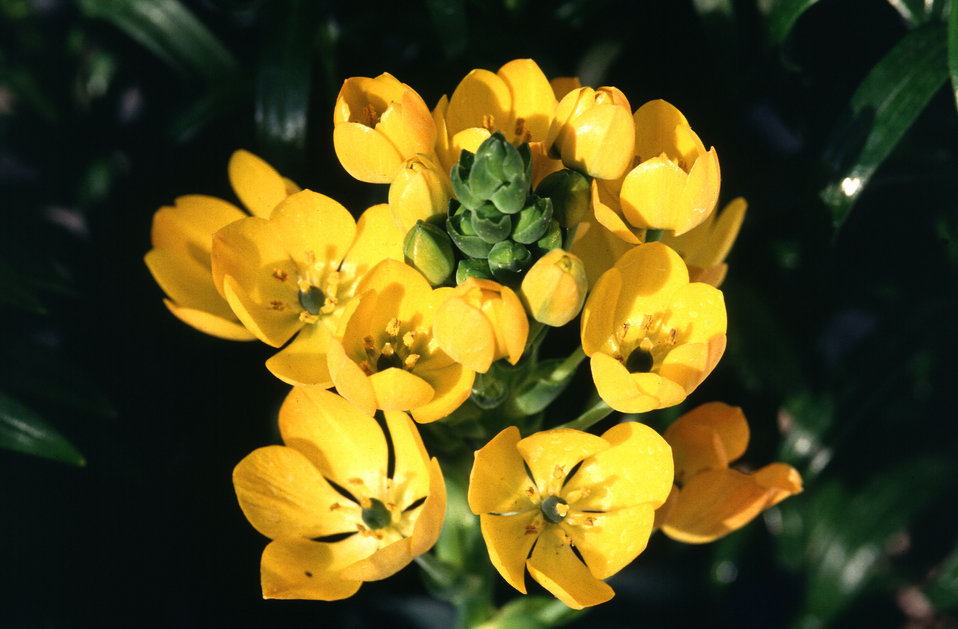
Star of Bethlehem (Ornithogalum hybrid) has six petals and is a perennial that can thrive in full sun to light shade.